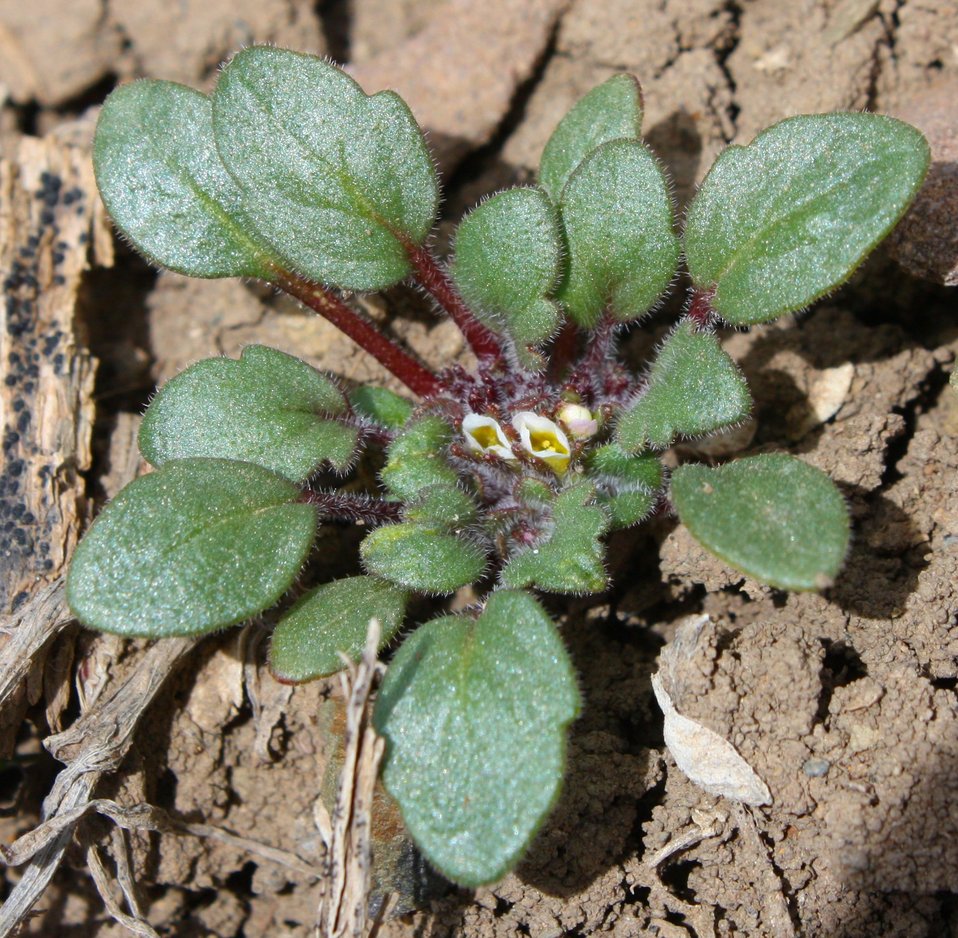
DeBeque phacelia in full bloom during May.

Photo credit: USFWS

...........................................................................
BACKGROUND:

DeBeque phacelia (Phacelia submutica) is a very small, low-growing plant with cream colored flowers and dark-green to purplish leaves. This member of the waterleaf family (Hydrophyllaceae) is an annual, emerging in early April and completing its one-year life cycle by mid-June. The plant is only found in a twelve-mile radius around the town of DeBeque, in Mesa and Garfield Counties, Colorado and is restricted to colorful exposures of chocolate to gray shades of alkaline clay soils within the Wasatch geologic formation. On these island-like barren exposures, it grows in small patches with few individuals. Individuals are known from 9 separate populations and numbers dramatically fluctuate from year-to-year, depending on climatic conditions.

DeBeque phacelia was first discovered in 1911 by naturalist George E. Osterhout, but extensive survey efforts to map the range of the species were not made until the 1980’s. Because of DeBeque phacelia’s limited range, small population size, and numerous threats to the species, it was proposed for listing as threatened under the Endangered Species Act in 2010 with a final listing expected in 2011. Threats to the species today include: oil and gas development, off-road vehicle traffic, heavy livestock use, proposed water projects, and potential effects from climate change.

To help manage and conserve DeBeque phacelia, research is underway to study the effects of dispersed development from oil and gas, off road vehicles, and grazing on the species. Another research project underway looks at the species’ reproductive strategy and collects information about its seed bank. In addition, this research is working to develop a method to survey for DeBeque phacelia year-round, using the seeds in the soil. Together, these projects will help land managers find ways to balance development with species conservation.

Eighty-seven percent of DeBeque phacelia populations are on public lands managed by the Bureau of Land Management and the U.S. Forest Service. The remaining twelve percent are on private lands. The Endangered Species Act does not protect plants on private lands and therefore, all conservation actions on private land are voluntary. Funding is available to landowners wanting to conserve the species. Please contact Gina Glenne or Ellen Mayo at 970-243-2778 for further information on this species and ways that you can help with conservation and recovery.